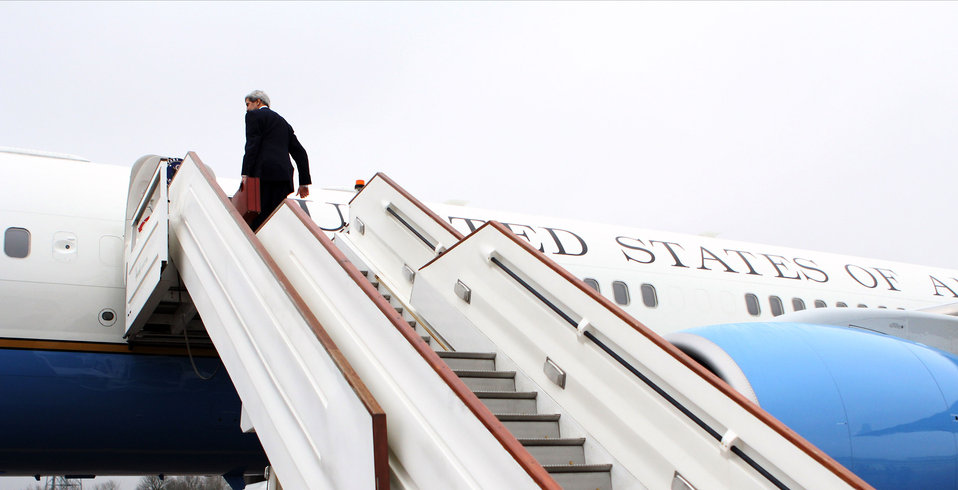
Secretary Kerry Boards the Plane

U.S. Secretary of State John Kerry boards the plane to travel to the Republic of Korea after participating in the G8 ministerial meetings in London, United Kingdom, April 11, 2013.